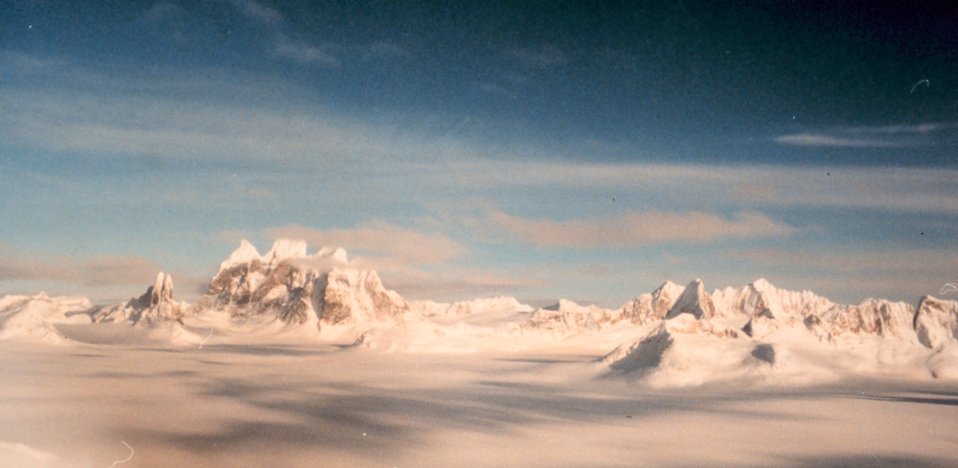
Taku Glacier after fall snows.